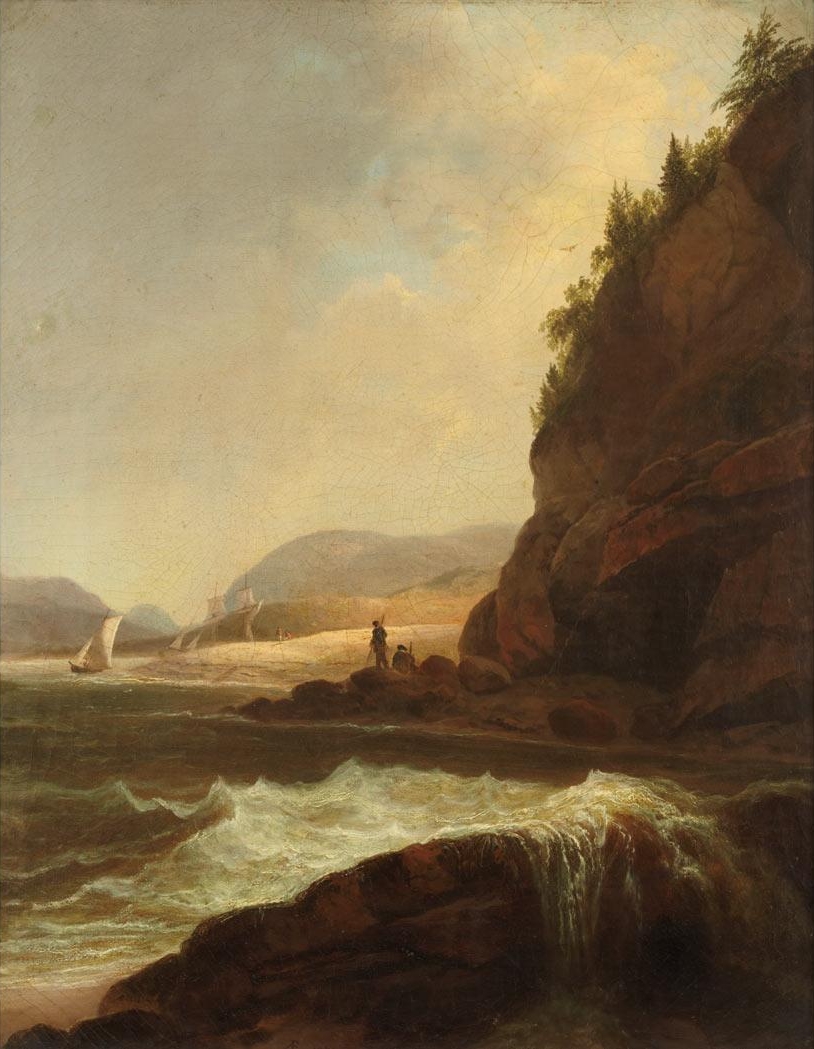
Alvan Fisher - Figures by a Rocky Inlet